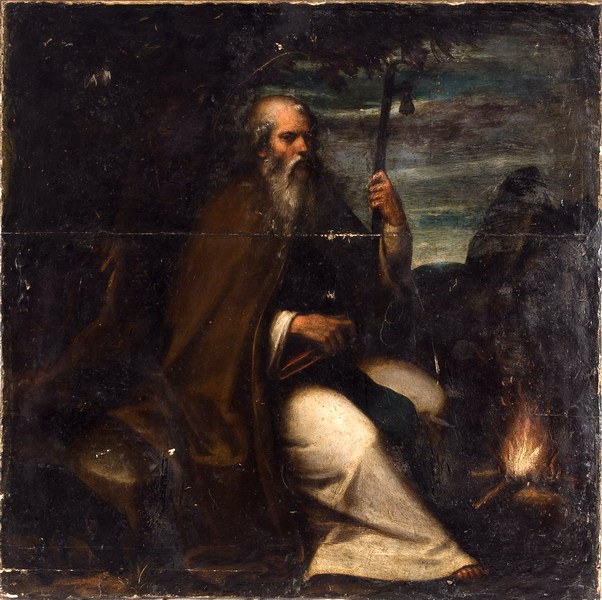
Español: 'San Antonio Abad' por Joan Sarinyena (1545-1619). Colección Joan J. Gavara (Valencia)